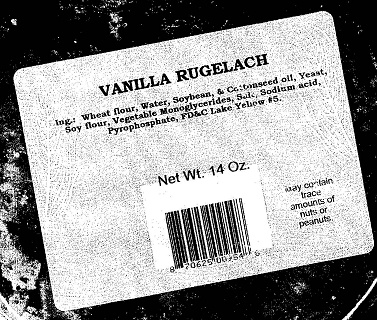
RECALLED – Rugelach 2

January 6, 2011 – Product Recall – Bloch’S Best Inc Issues Allergy Alert On Undeclared Eggs In Laromme Brand Vanilla Rugelach In 14 Oz. Round Containers.